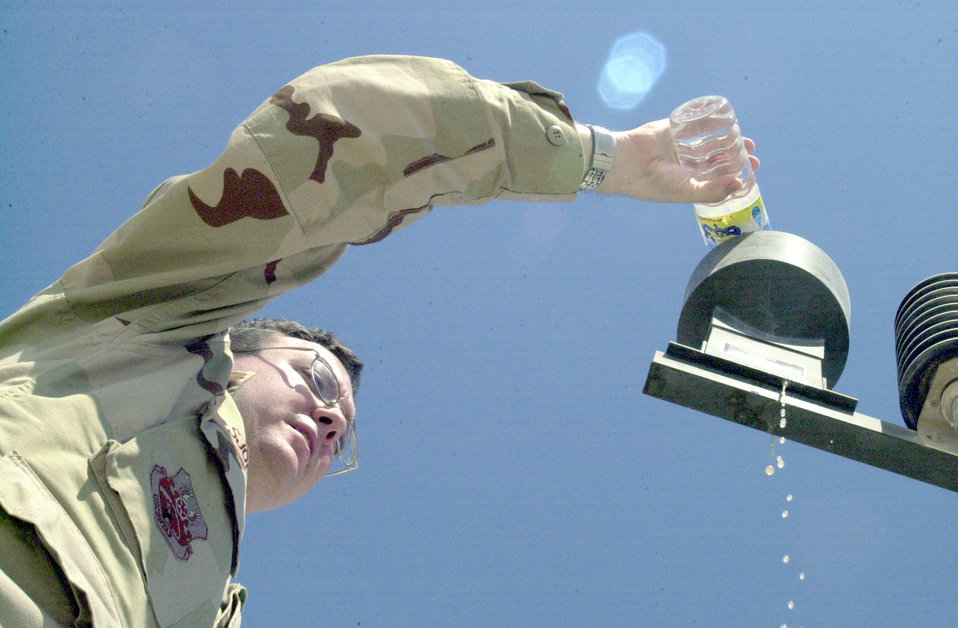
Despite predictable weather, specialists still keep busy

SOUTHWEST ASIA -- Senior Airman Jasson Sjoberg pours water into the tactical meteorological observation system as part of a function check to make sure the device, which measures precipitation, is still operational. The last date a measurable amount of precipitation fell at his forward-deployed location was April 13 when the weather flight recorded 0.03 inches of rain.